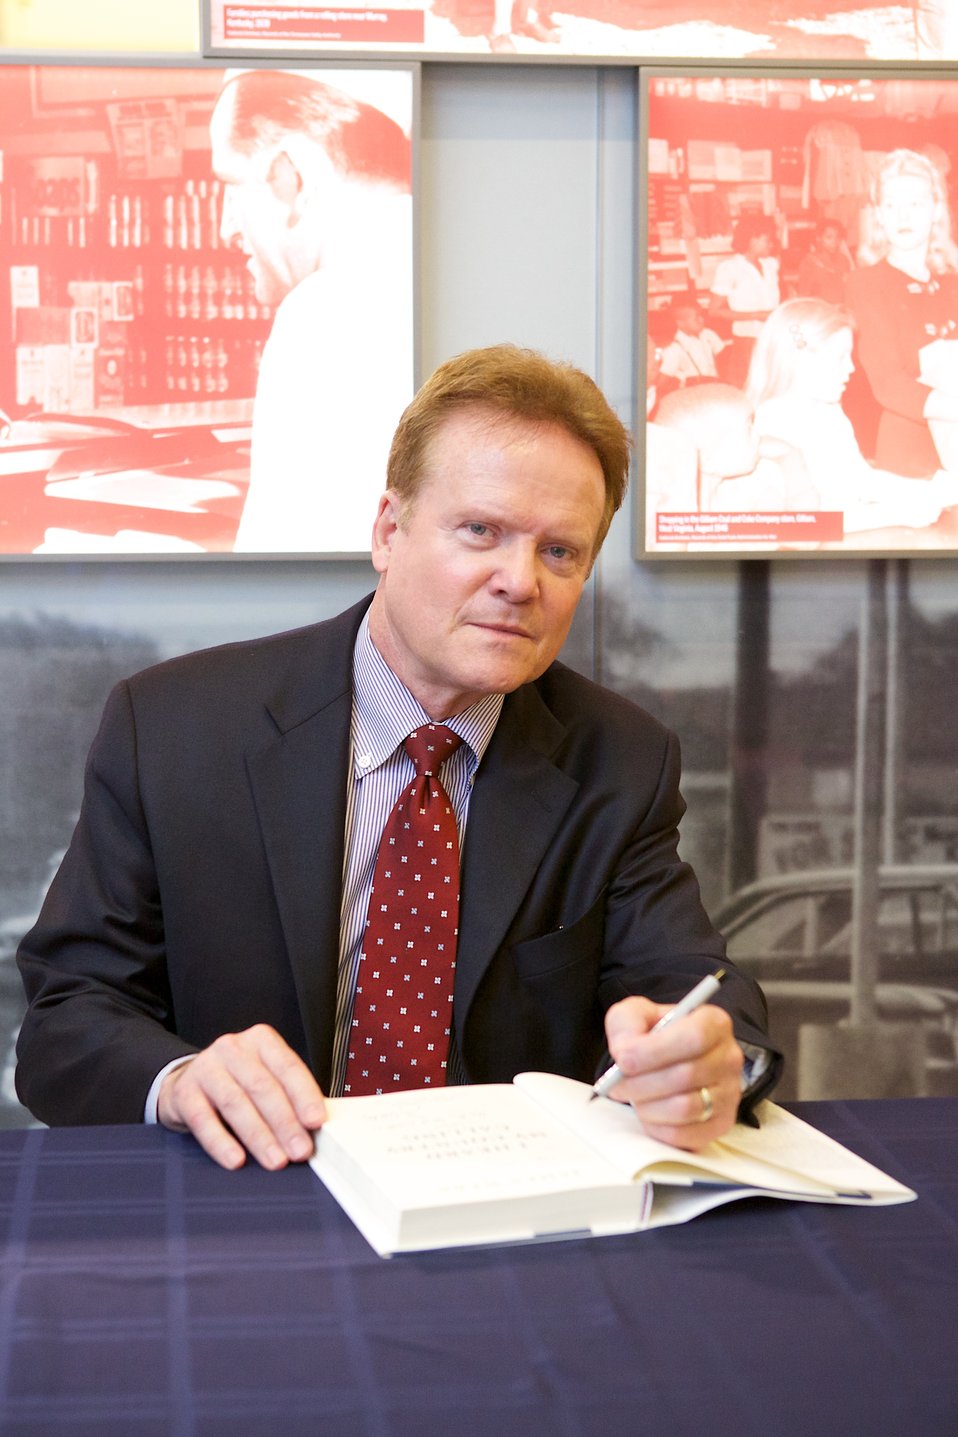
I Heard My Country Calling: A Memoir I Heard My Country Calling: A Memoir; James Webb, Former Senator and author, autographs books after his lecture